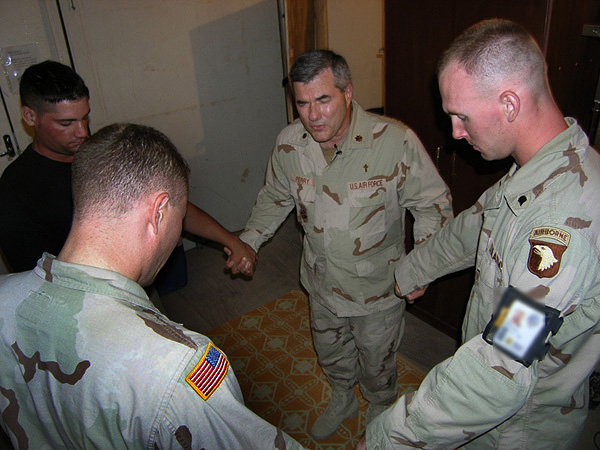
Chaplain Perry

ALI BASE, Iraq -- (Center) Chaplain (Maj.) Charles Perry prays with (from left) Senior Airman Josh Jacobs, Army 2nd Lt. Scott Nelles and Army Spc. Brian Collins before a contemporary gospel service. Chaplain Perry is the 407th Air Expeditionary Group Protestant chaplain.